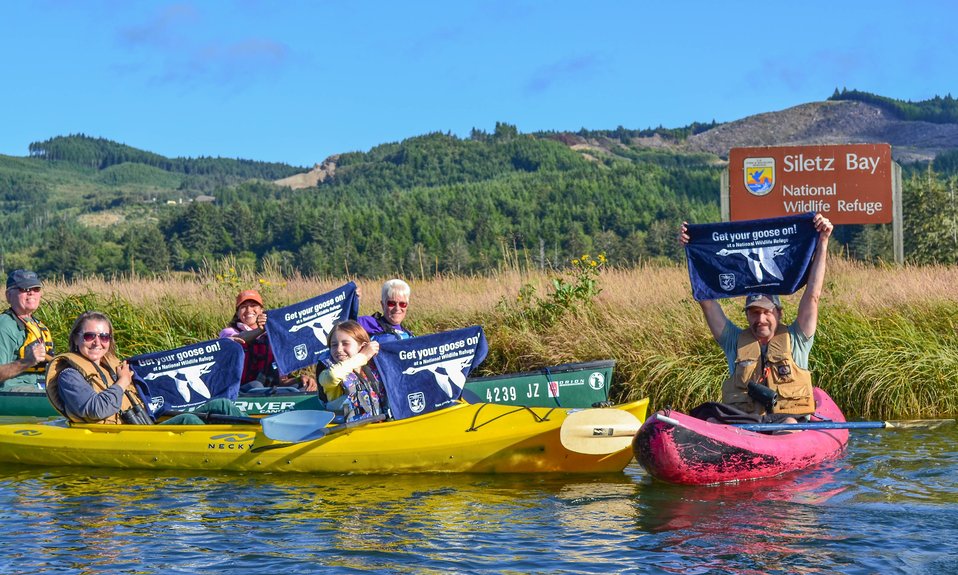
Get Your Goose On! - Siletz Bay Style

Paddling with friends in Siletz Bay National Wildlife Refuge!